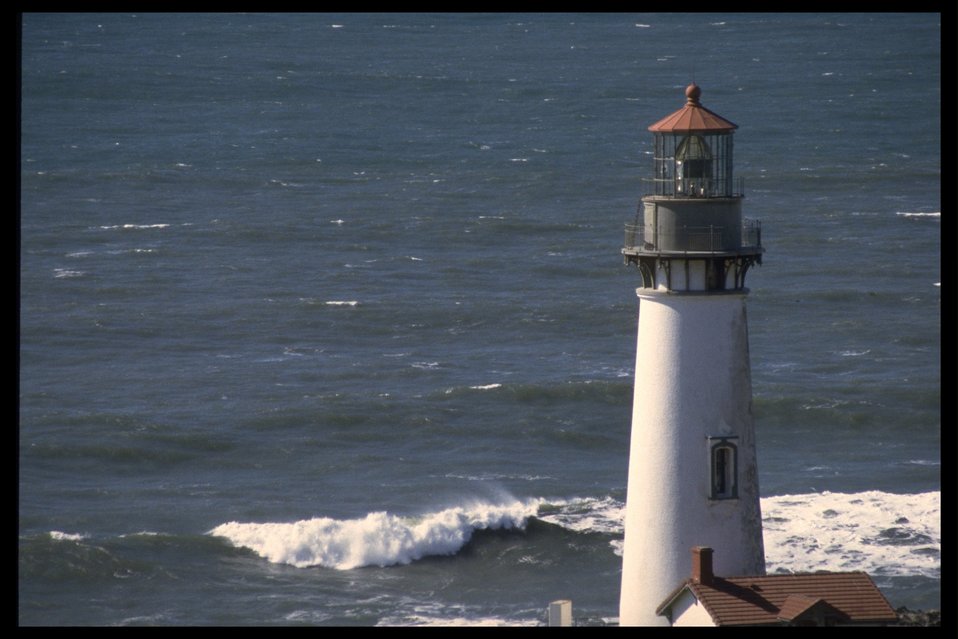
Yaquina Head Lighthouse.